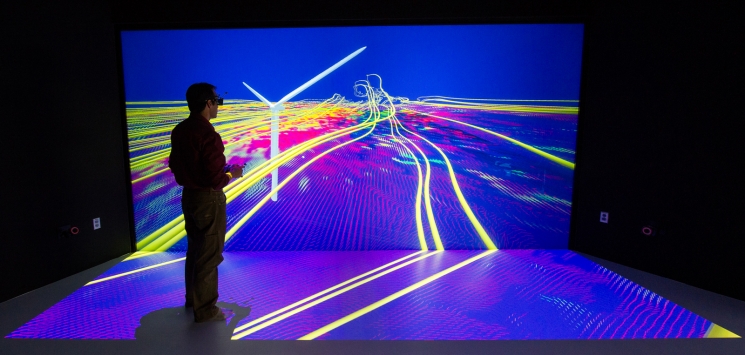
Photo of the Week: Eye-to-Eye with a Wind Turbine

At the National Renewables Energy Laboratory (NREL), scientists use the Insight Center Collaboration Room to examine and interact with their data. In this simulation, the room is converted into a virtual wind tunnel, allowing scientists to study the complex, turbulent flow fields around wind turbines.

Pictured here, NREL Senior Scientist Kenny Gruchalla examines the velocity field surrounding a wind turbine, using a 3-D model projected onto the center's 16-by-8 foot wall. The simulation helps scientists better understand flow patterns, and further, how turbines can better avoid gearbox failures.